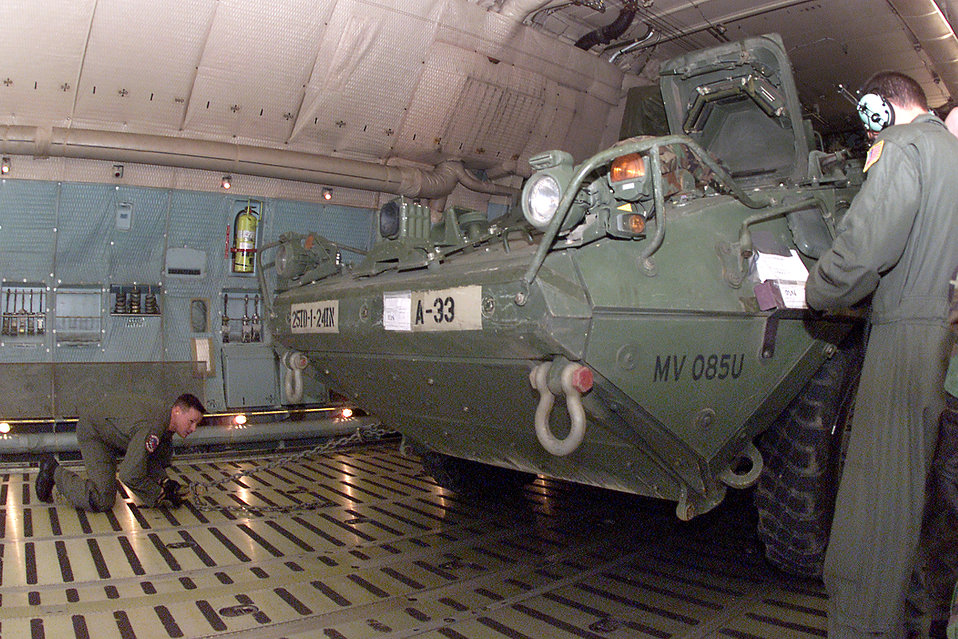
Stryker tie down

OSAN AIR BASE, South Korea -- Tech. Sgt. Larry Wittkowski ties down a Stryker M-1126 infantry carrier after it was loaded onto a C-5 Galaxy on April 8 for transport back to Fort Lewis, Wash. The Stryker was used during a Foal Eagle exercise in South Korea. Sergeant Wittkowski is from the 22nd Airlift Squadron at Travis Air Force Base, Calif.